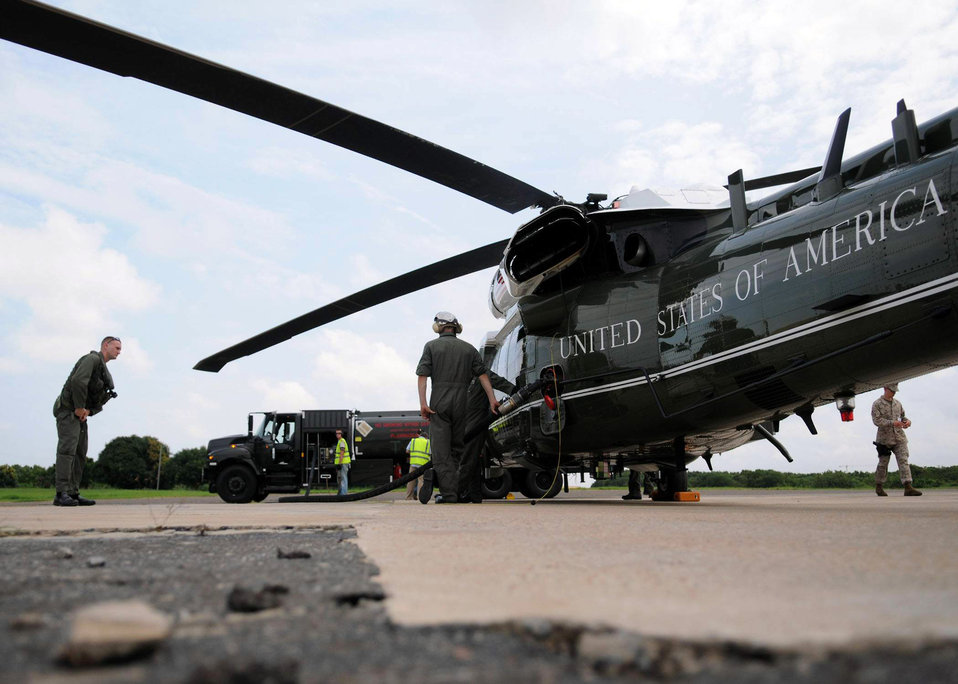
17th Air Force members support presidential visit to Ghana

Members of the 435th Logistics Readiness Squadron assist with refueling Marine One at Kotoka International Airport July 6 at Accra, Ghana. The Airmen are among more than 150 Airmen, Sailors and Marines in Ghana and Sailors aboard the USS Iwo Jima who came together to form a task force to support President Obama's visit July 10 and 11. Members of the 435 LRS are a petroleum, oils and lubricants team from Ramstein Air Base, Germany.